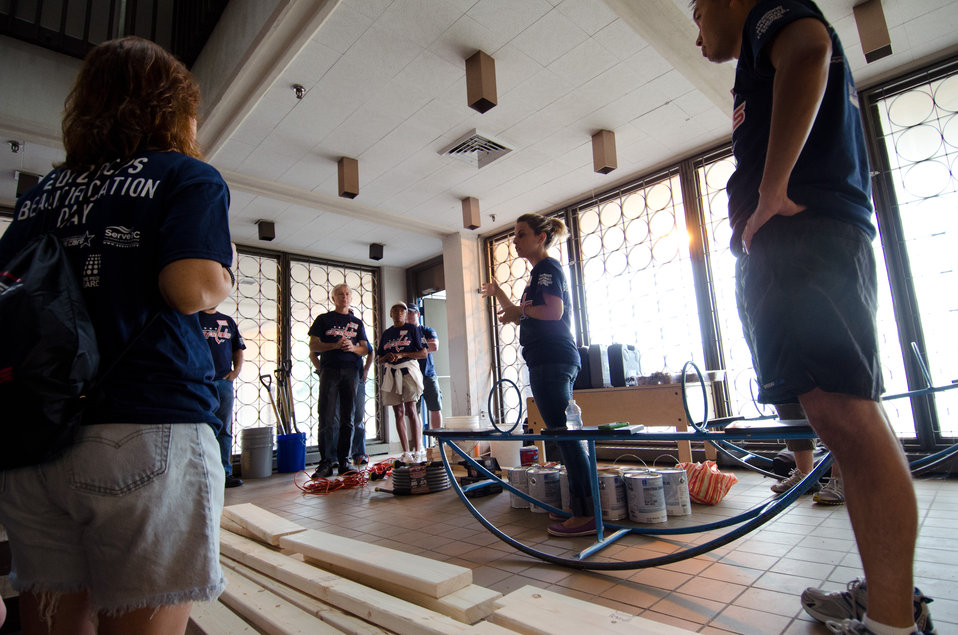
U.S. Department of Agriculture (USDA) Outreach and Education Coordinator Annie Ceccarini (center) welcomes People’s Garden Executive Master Gardeners, friends, and family, along with Washington Capitals fans to a day of volunteering on the Garden Planter / Toolshed Team, during District of Columbia Public Schools’ (DCPS) Beautification Day, on Saturday, August 25, 2012, at Thurgood Marshall Elementary School, in Washington, D.C. Each year people are invited to help “spruce up” public school facilities in preparation for the first day of school. More than 70 volunteers pitched in at this large school facility. The People’s Garden effort involves building and painting raised planter boxes, then preparing the soil mixture so they are “ready to grow.” Additionally, a team that includes descendants of U.S. Supreme Court Justice Thurgood Marshall assembles a prefabricated garden toolshed. The Justice’s son, John Marshall leads the team, which includes Brianna the Justice’s great-grand daughter in one of many multi-generational efforts at this school today. Washington Capitals Forward Mike Riberio, his family and mascot Slapshot participated in every project underway at Marshall School. From the outside gardens, to inside murals, and robotics worktable construction, the teams made their goals.